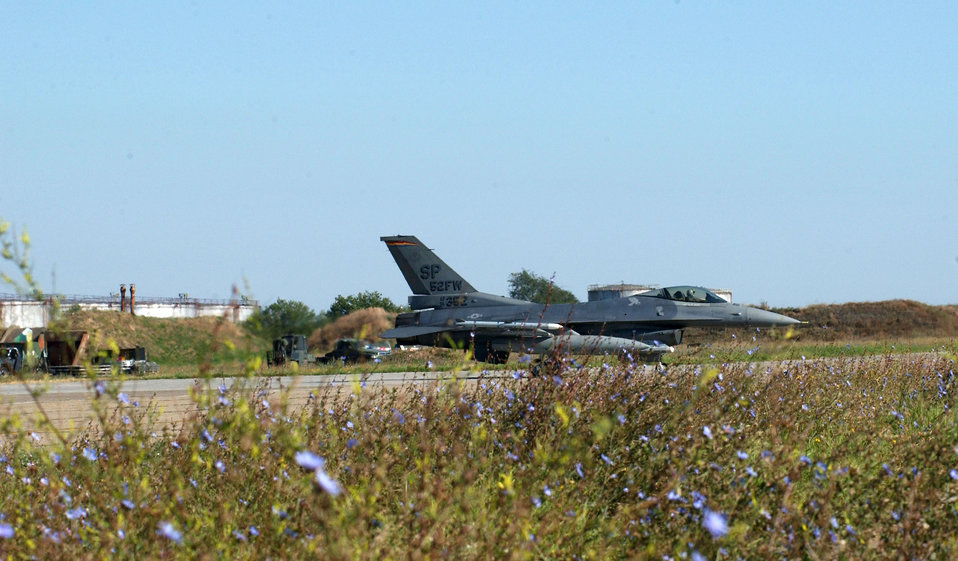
Viper Lance wraps up

An F-16 Fighting Falcon taxis at Mihail Kogalniceanu Air Base, Romania, during Exercise Viper Lance 2006 Aug. 24. The exercise marked the first time F-16 crews trained in Romania. They flew 220 sorties and more than 300 hours in the exercise which ran Aug. 8 to 24.